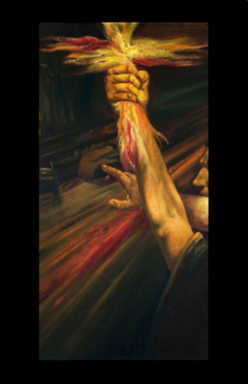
Detail of 'Voz del Pueblo, Voz de Dios', painting by José Suárez Olvera